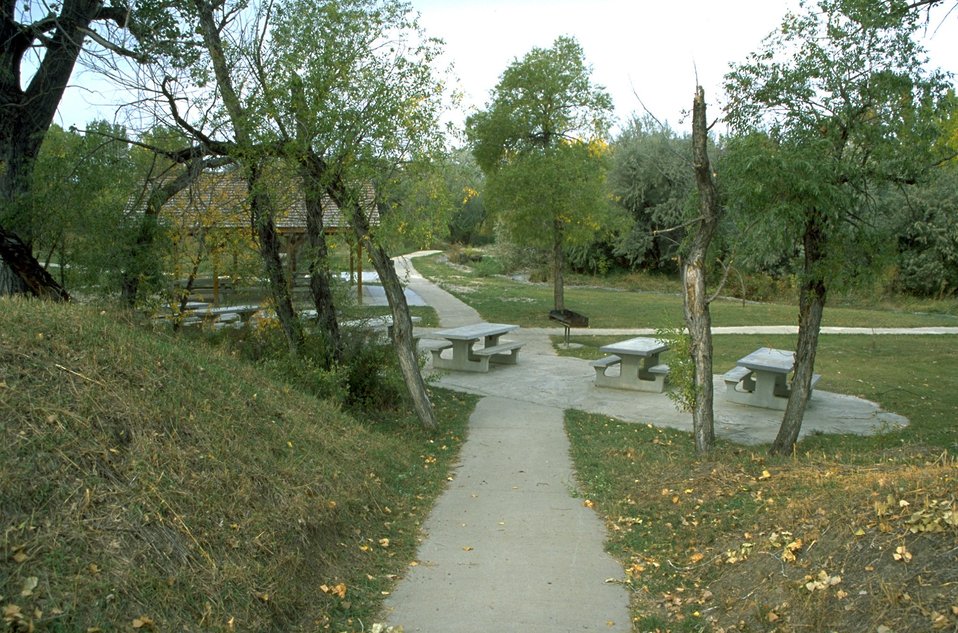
Picnic tables at Matthew Recreation Site